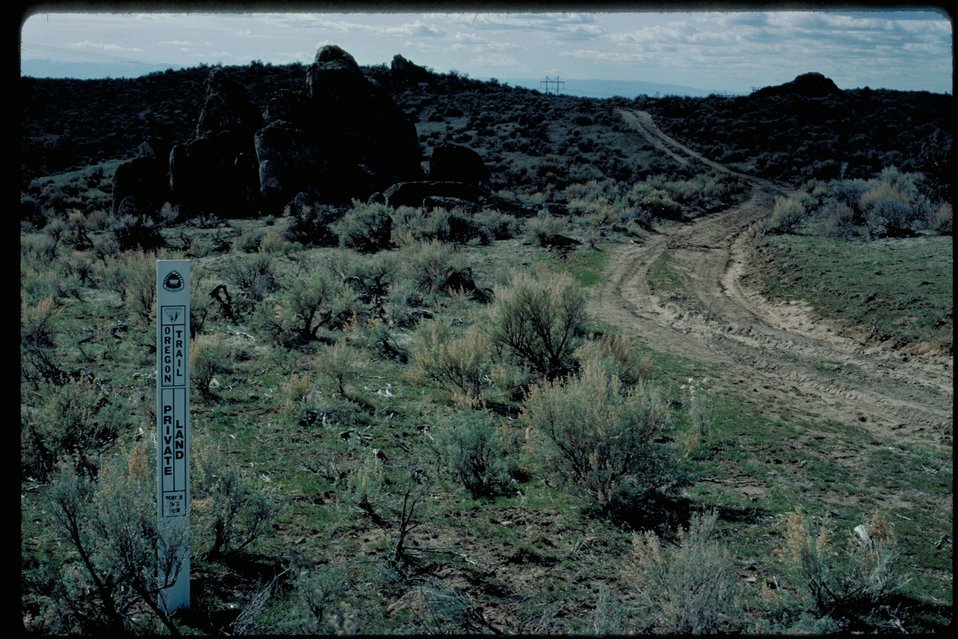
Oregon Trail east of Bowns Creek Lower Snake River District